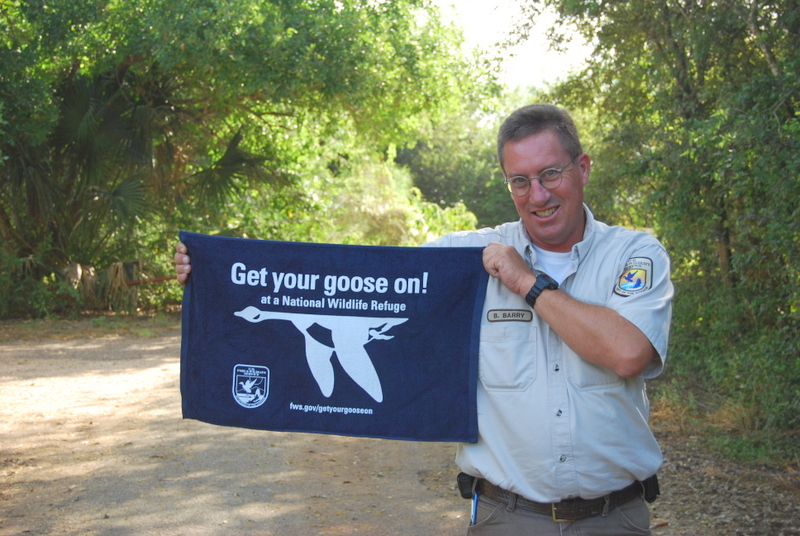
Get Your Goose On!

Photo taken at Santa Ana National Wildlife Refuge in southern Texas.